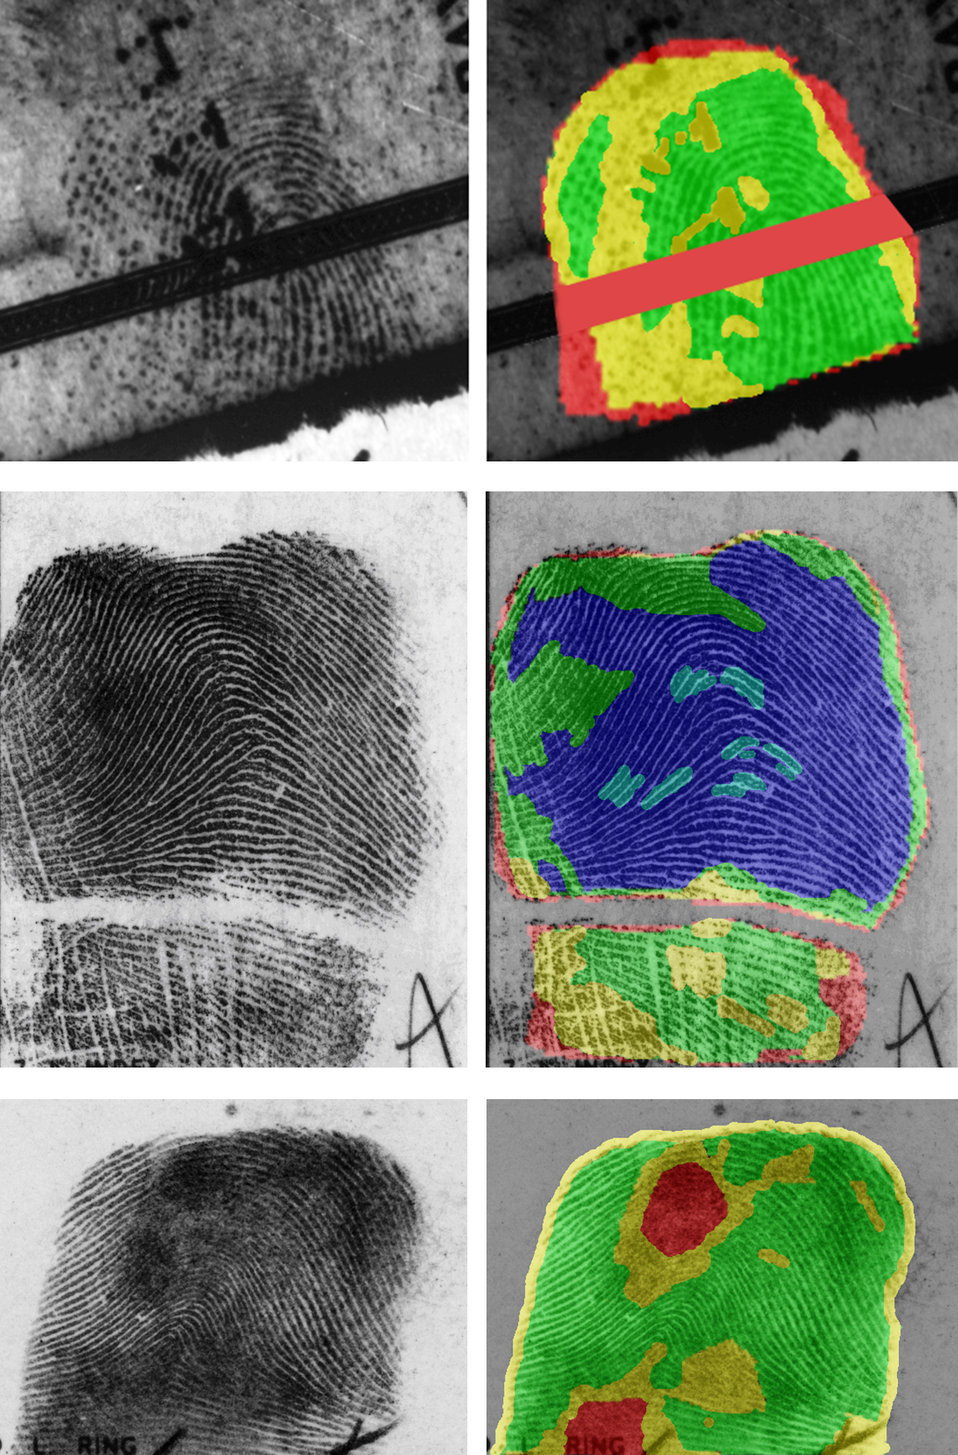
Fingerprint images

Examples of fingerprint images (left column) on which a colored-coded quality map has been superimposed (right column). The color coding provides forensic examiners with a means of marking the quality of the data that can obtained from the friction ridge details seen in the images. Blue areas are excellent, green are satisfactory, yellow may potentially contain false or missed features, and red have no value at all.